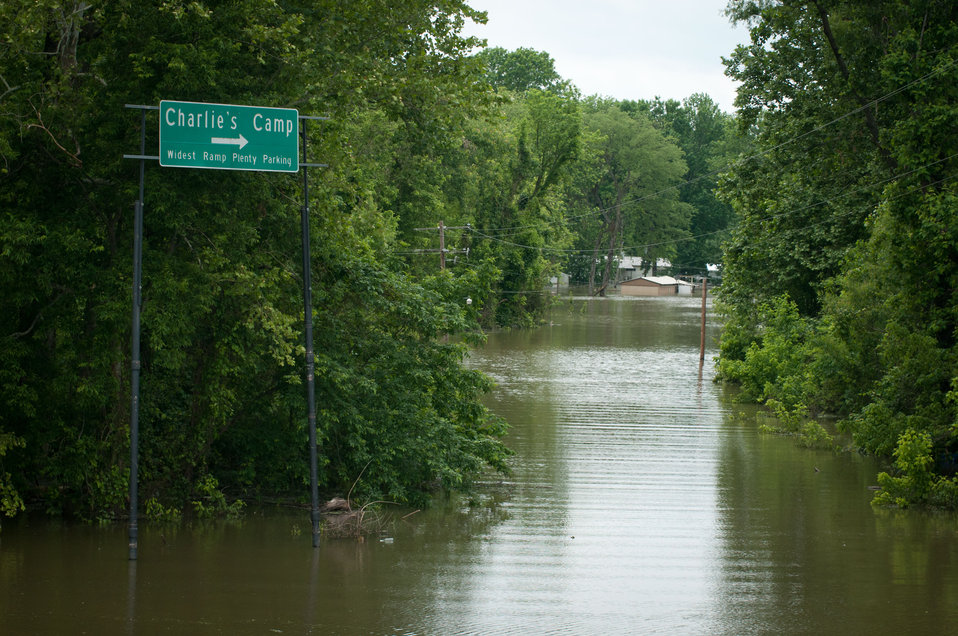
Floods waters from Mississippi River inundated Tunica Cutout, MS on Sunday, May 15. 2011. The entire population was relocated nearby to the protected side of the levee.